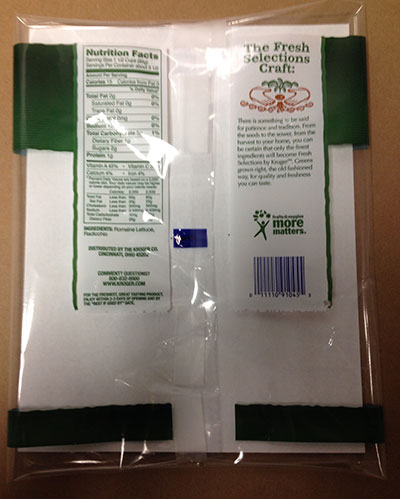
RECALLED – Variety of Bagged salads

March 13, 2014 – Product Recall – Dole Fresh Vegetables Voluntarily Recalls Limited Number of Bagged Salads Due to Possible Health Risk
.